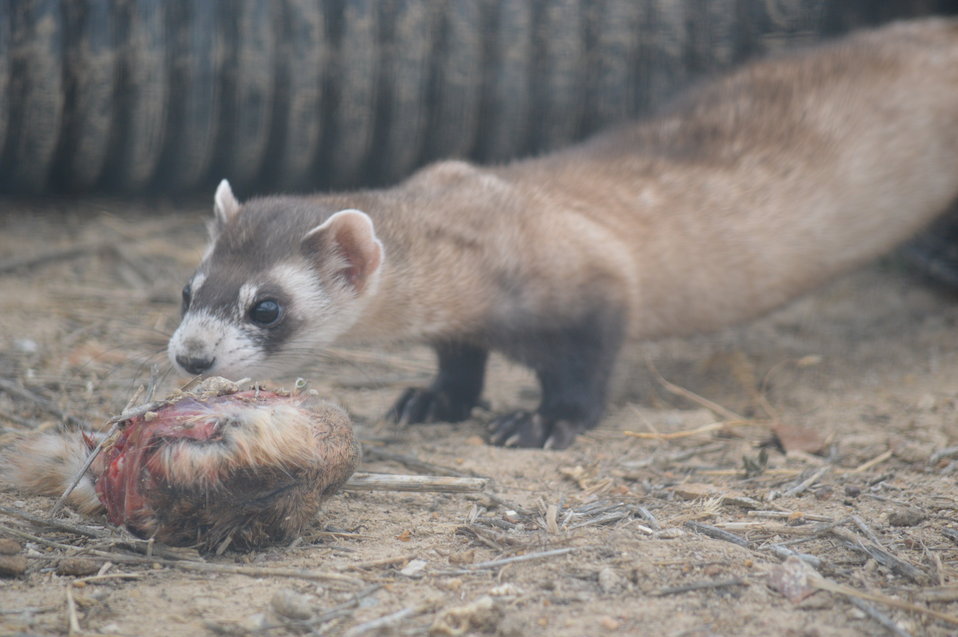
Interns visit the NBFFCC

In the summer of 2012, USFWS Region 6 interns visited the National Black-footed Ferret Conservation Center (NBFFCC) in Colorado to learn how the program reintroduces the endangered Black-footed ferret back into its native habitat.